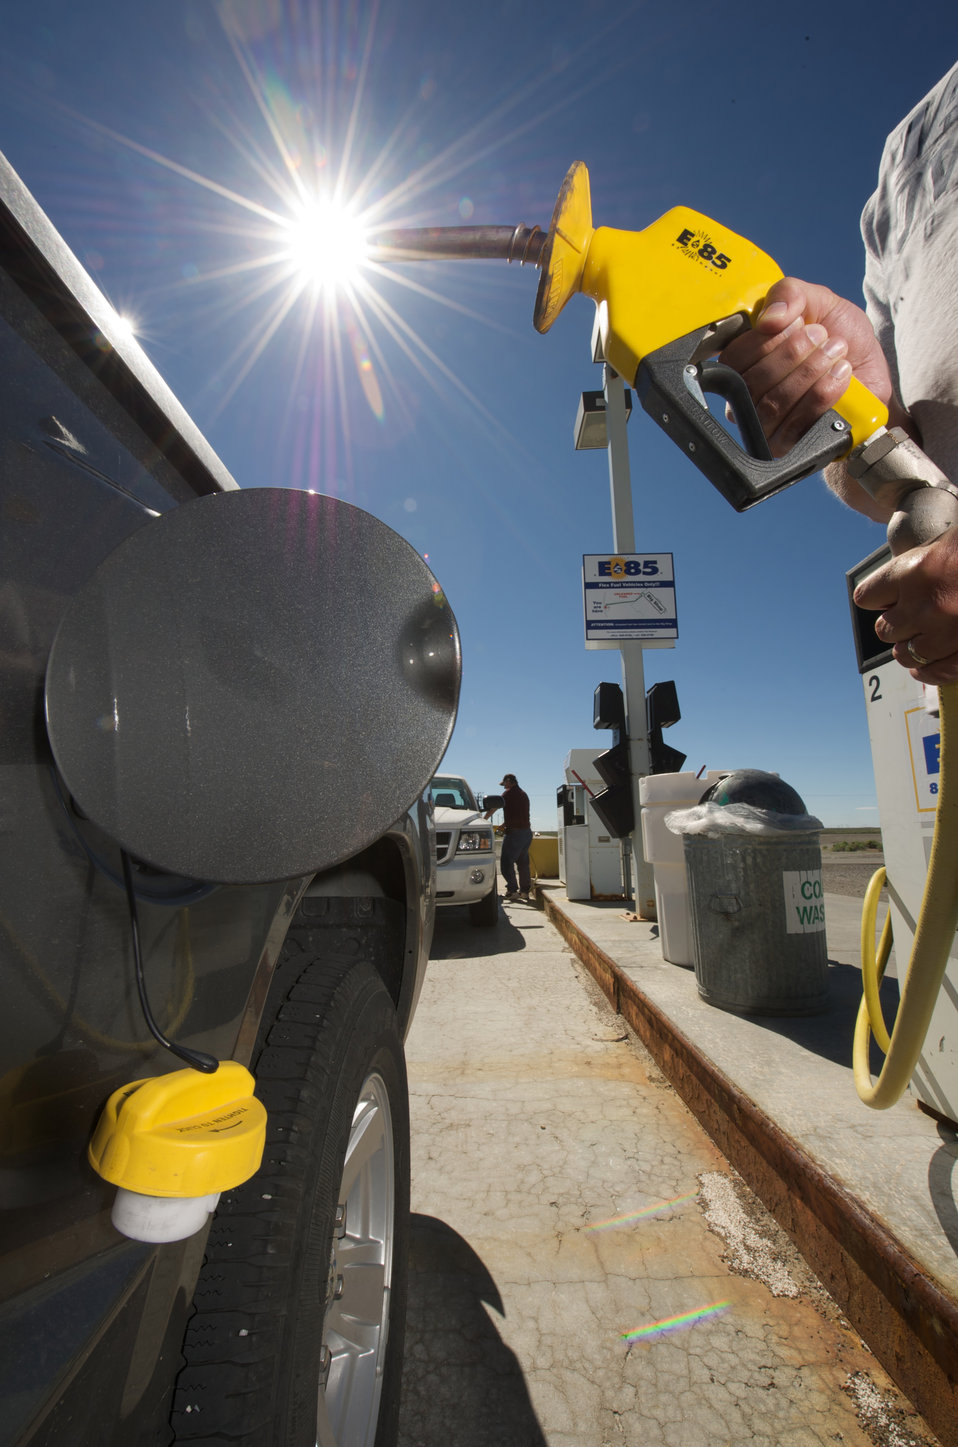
Idaho National Laboratory fleet vehicle fueling with E85 (85% Ethanol).